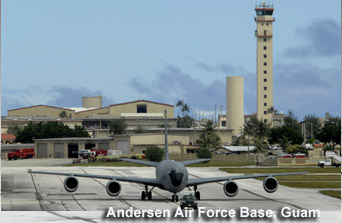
Andersen Air Force Base, Guam

On Oct. 7, 1949, Andersen Air Force Base, Guam was named in honor of Brig. Gen. James Roy Andersen, who died on Feb. 26, 1945. Andersen was presumed lost at sea in the crash of his B-24 Liberator in an aircraft accident near Kwajalein Island on his way to Hawaii.